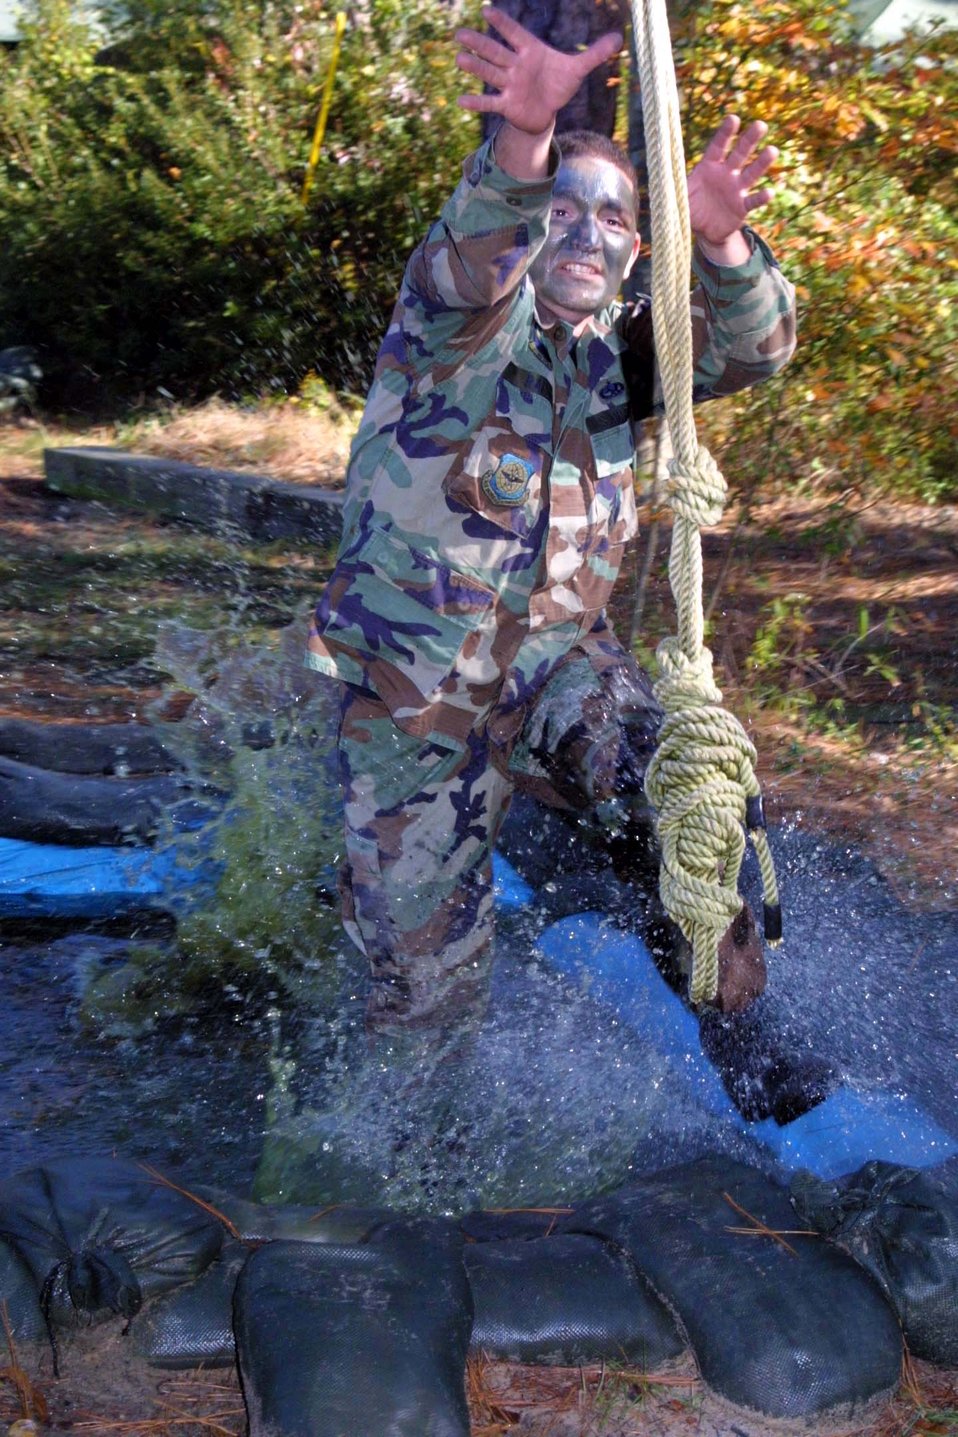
Reaching out

POPE AIR FORCE BASE, N.C. -- Staff Sgt. Timothy Raponi chases the rope swing at an obstacle course competition here recently benefiting the Combined Federal Campaign. To qualify for the event, enlisted participants pledged $1 per stripe and officers gave $10 plus their respective ranks. The five-person team with the best time donated the money to the CFC fund of their choice. Six teams participated from the 43rd maintenance and aircraft maintenance squadrons here and raised $149. CFC benefits more than 1,700 charities worldwide. Raponi is assigned to the 43rd Maintenance Squadron.